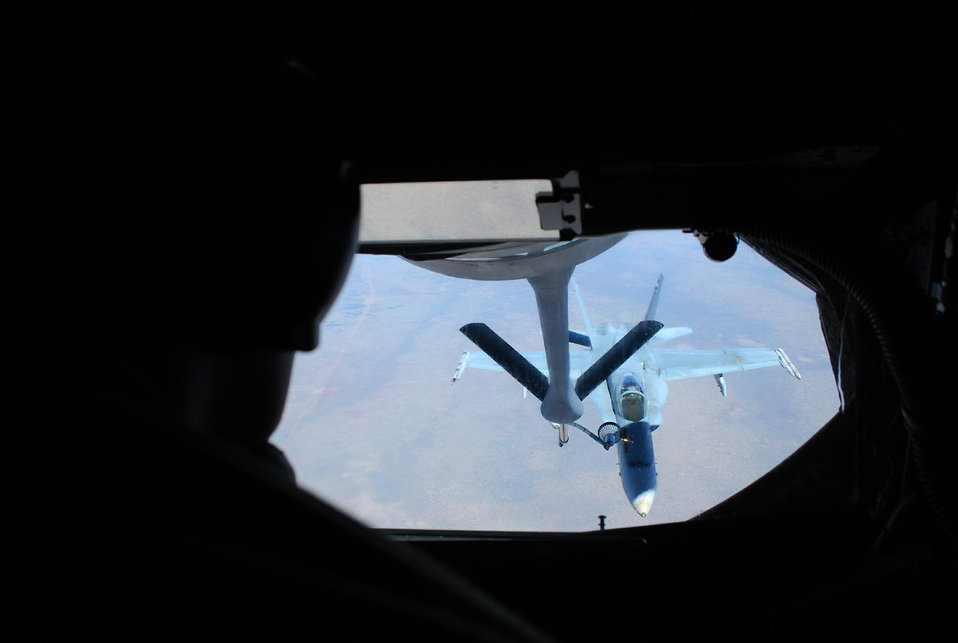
Airmen keep exercise participants flying high down under

Beyond the silhouette of Staff Sgt. Kenneth Harwood, a Royal Australian Air Force F-18 receives fuel July 19 over Australia. The aircraft were participating in a mock air war over Australia as part of Exercise Talisman Saber 2009. Sergeant Harwood is 909th Air Refueling Squadron instructor boom operator from Kadena Air Base, Japan.